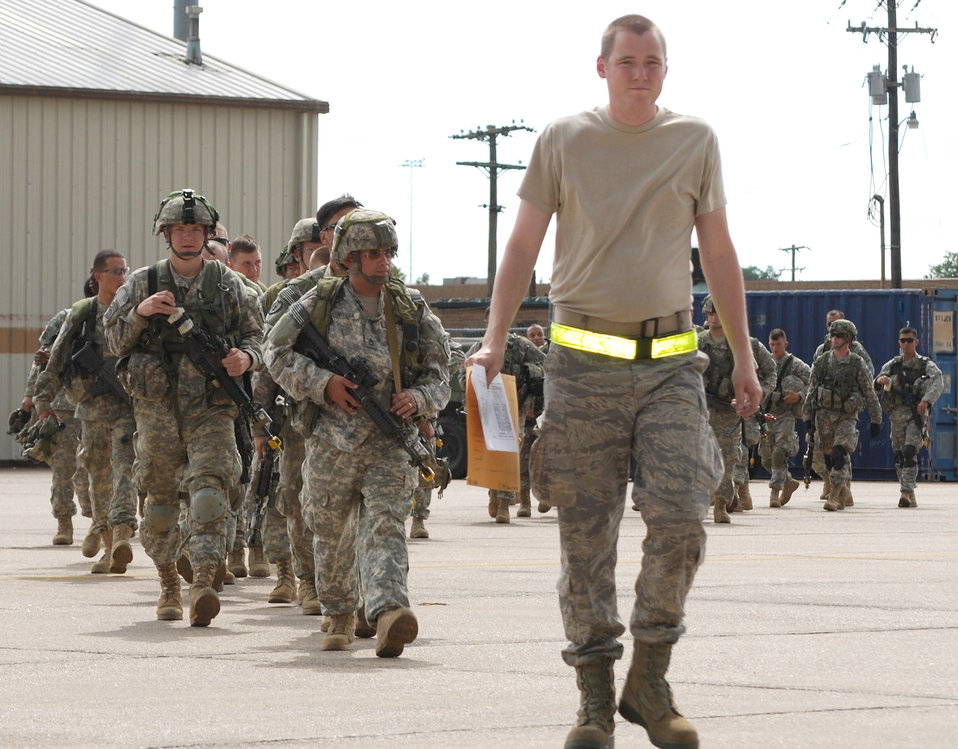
615th CRW P

Airman First Class Collin Pinkerton-Morrow leads a group of Soldiers onto the flightline to board a C-130 Hercules departing to a forward operating location during a Joint Readiness Training Center exercise Oct. 18 at Alexandria International Airport in Lousiana. Airman Pinkerton-Morrow is with the 570th Global Mobility Squadron.